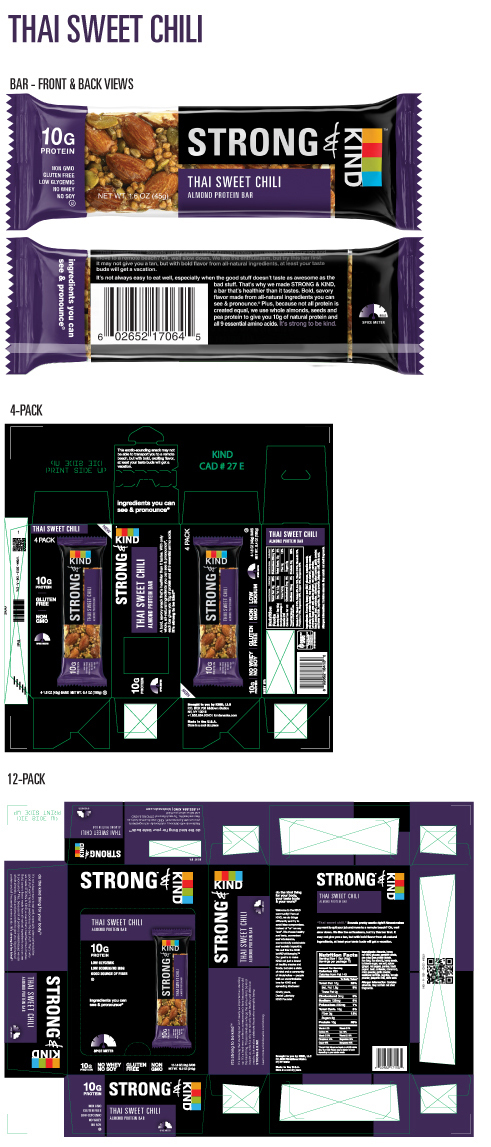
RECALLED – Bars

May 21, 2014 – Product Recall – Kind Healthy Snacks Issues Allergy Alert Due to Potential Presence of Peanut Protein in Strong & Kind Bars and Kind Healthy Grains Maple Pumpkin Seeds Bars.